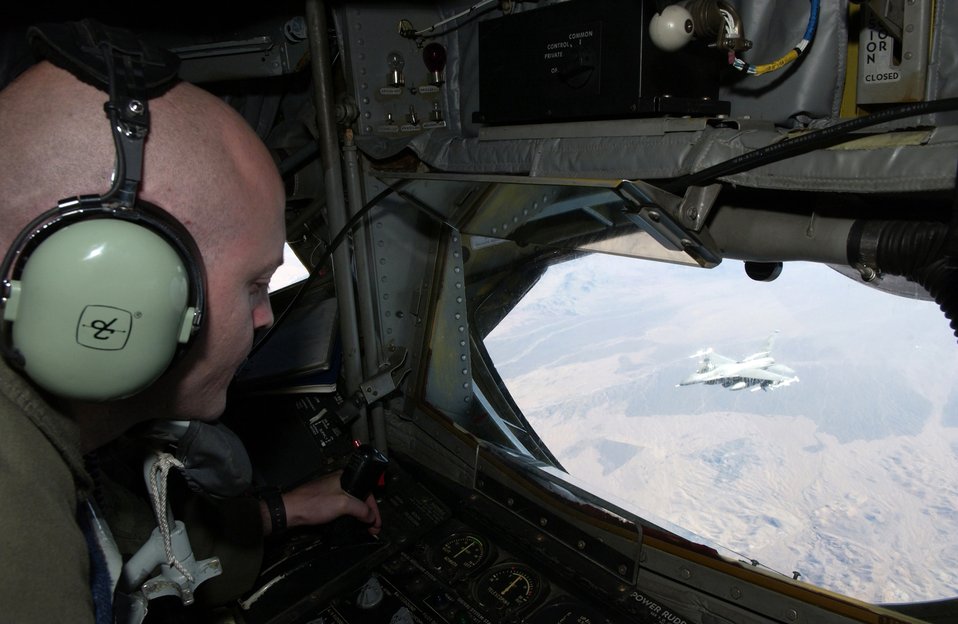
Airmen hone skills at Red Flag

Senior Airman Jesse Wright prepares to fuel an F-16 Fighting Falcon
Oct. 19 during Red Flag 07-1. Red Flag, held at Nellis Air Force Base, Nev., Oct. 10 to 20, tests aircrew warfighting skills in realistic combat situations. The aircraft fly missions at the nearby Nevada Test and Training Range simulating an air war. Airman Wright is a KC-135 Stratotanker boom operator with the 92nd Air Refueling Squadron at Fairchild AFB, Wash.